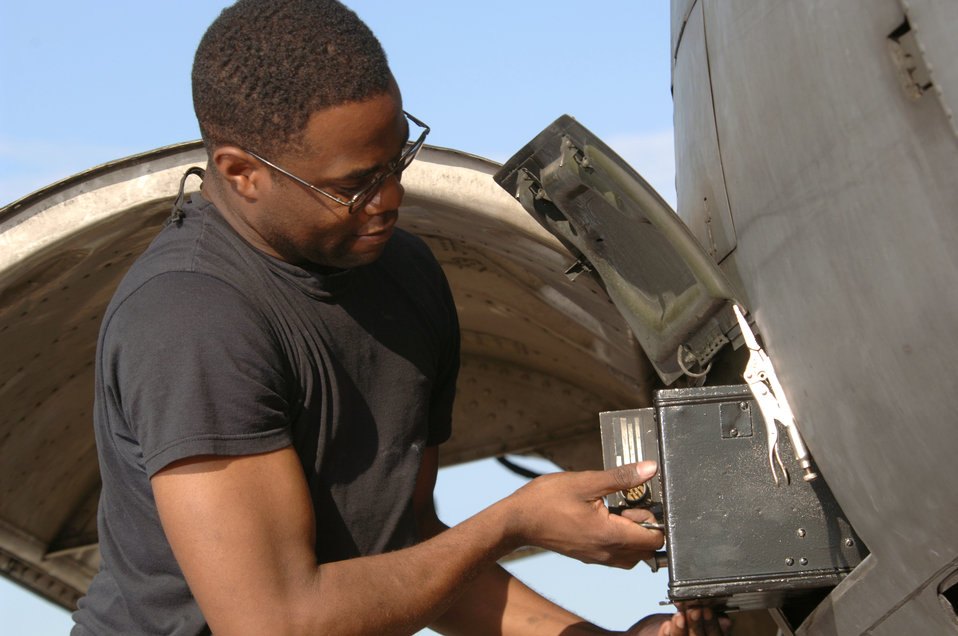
Checkin' things out

YOKOTA AIR BASE, Japan -- Staff Sgt. Anthony Page removes an automatic direction finder unit from a C-130 Hercules during routine inspection here. Airmen with the 374th Maintenance Squadron here inspect, service and repair assigned and in-transit C-130 aircraft. Sergeant Page is a communications navigation technician with the squadron.